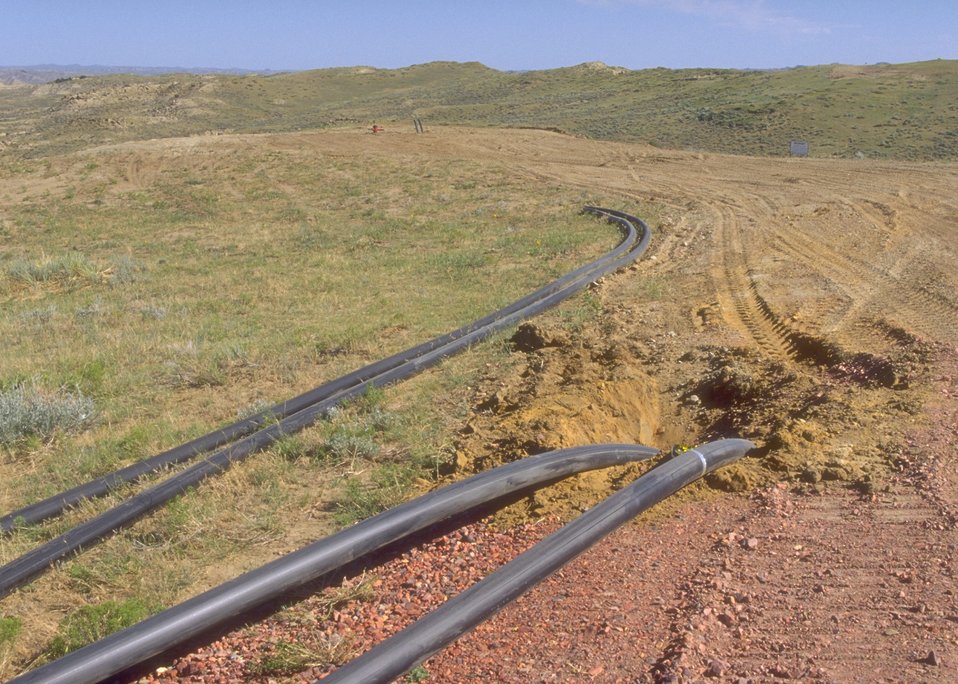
Construction for coal bed methane development, Buffalo Field Office.